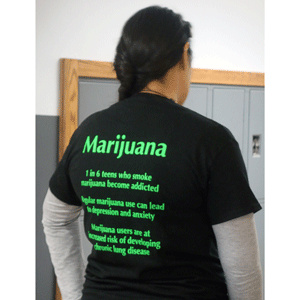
NDFW 2014: Kansas Coverage

Go KFP! Kansas Family Partnership sent a Lawrence High School press release and pitch email about National Drug Facts Week Events to its Lawrence media contacts on Lawrence High School’s activities, the national campaign and KFP’s social media campaign, which resulted in coverage from 6 News Lawrence, KS.